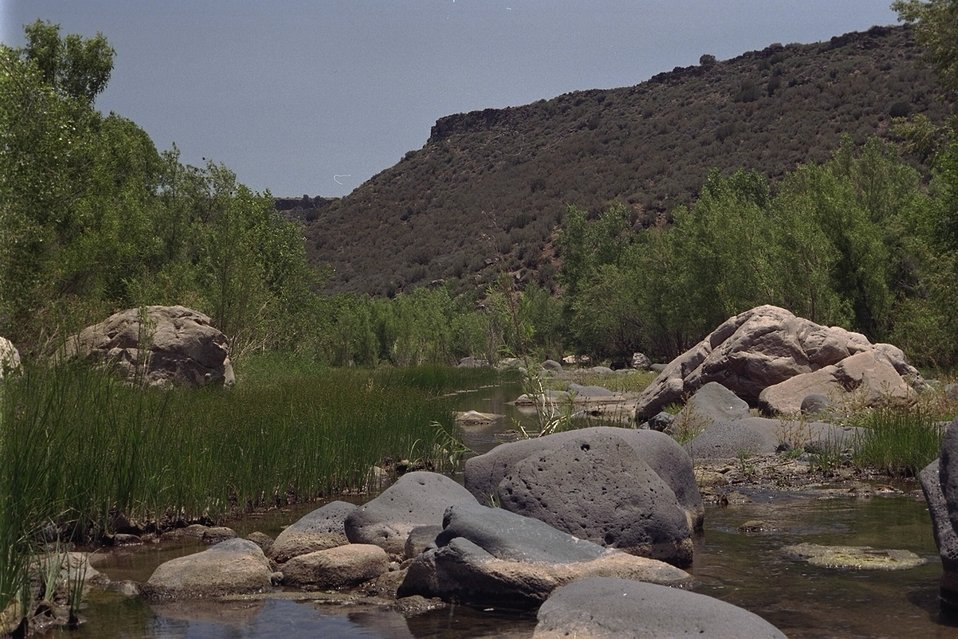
The Agua Fria River runs through the canyon that shares its name.